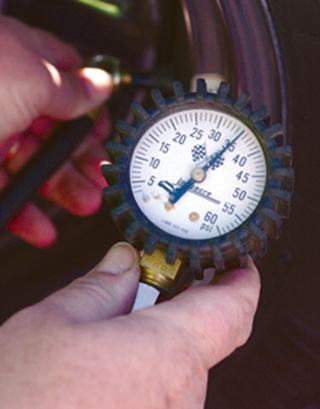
Airman spends free time living only way he knows -- fast

KENLY, N.C. -- Master Sgt. Warren Howard makes sure his tire pressure is at the proper level to give him added control of his car during a race here. If the tires have too much air in them, they can lose grip of the track during the race. He has raced cars since he was 16 years old and is the environmental coordinator with the 4th Equipment Maintenance Squadron.